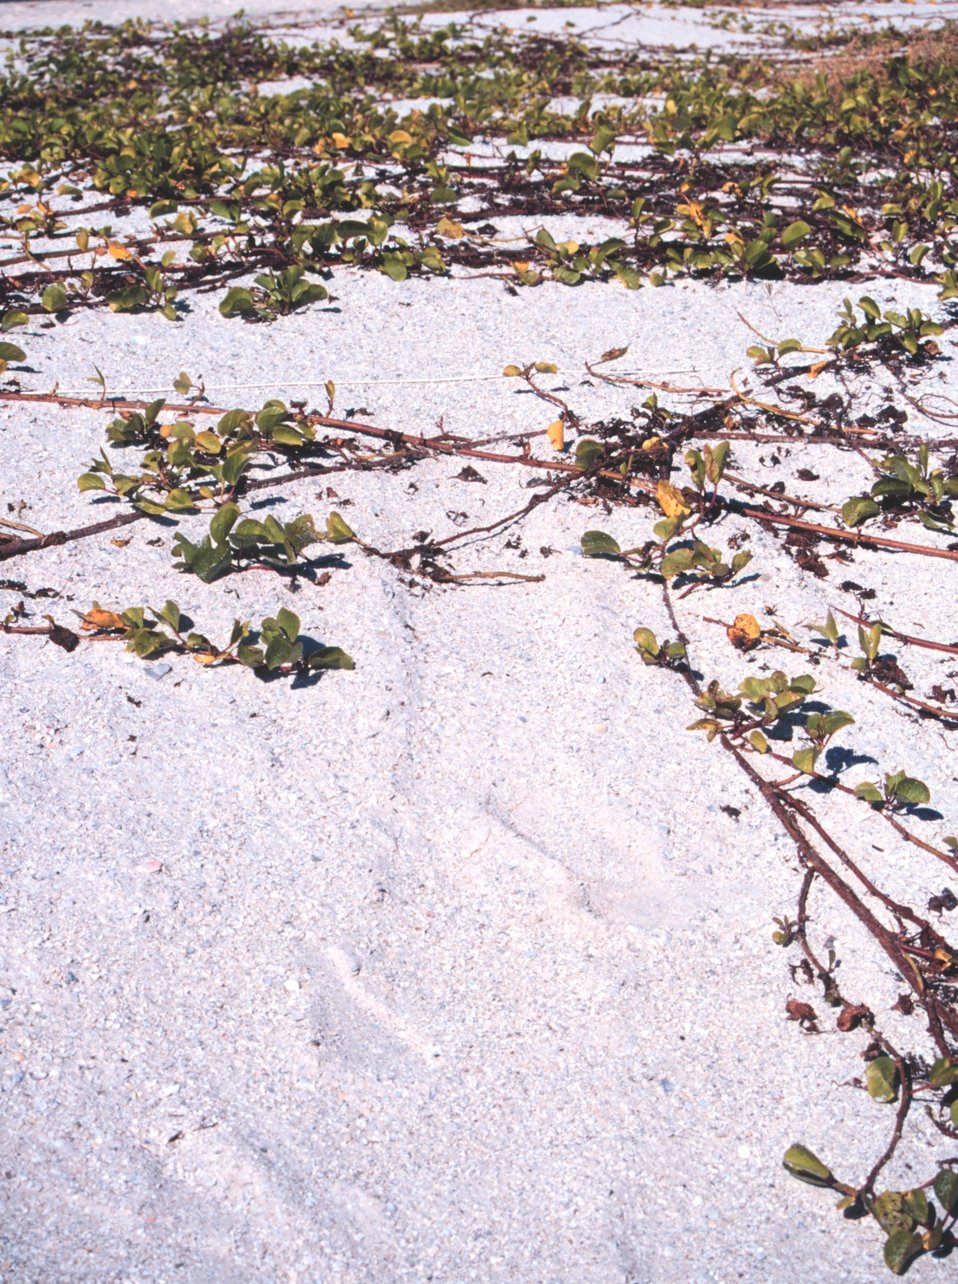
A view of the beach along the Gulf of Mexico